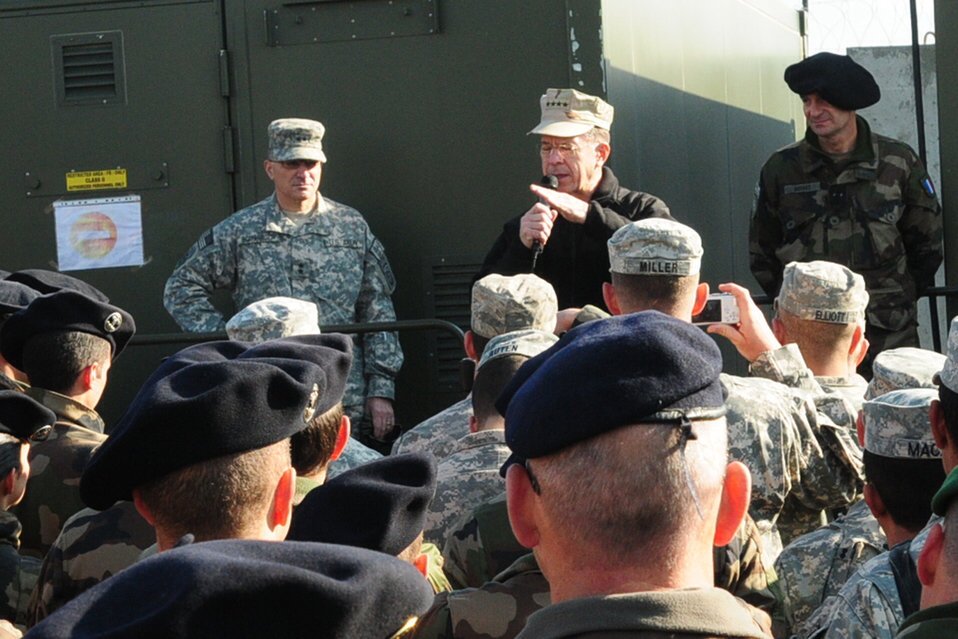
Chairman of the Joint Chiefs of Staff visits Afghanistan

Navy Adm. Michael Mullen addresses a crowd of coalition servicemembers Dec. 16, 2009, at Forward Operating Base Morales-Frazier, Afghanistan. Admiral Mullen met with French Brig. Gen. Marcel Druart to learn more about coalition efforts in Nijrab, Afghanistan and other nearby areas. It was the first meeting between the two since Task Force Lafayette's' assumption of command in November 2009. Admiral Mullen is the chairman of the Joint Chiefs of Staff. General Druart is the commander of Task Force La Fayette.